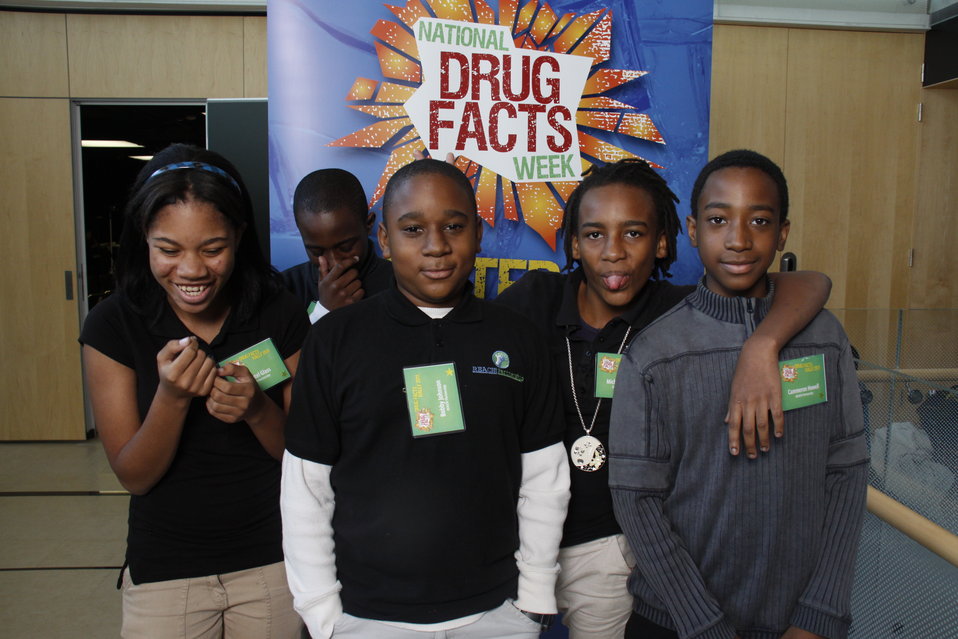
NDFW Mentor Event